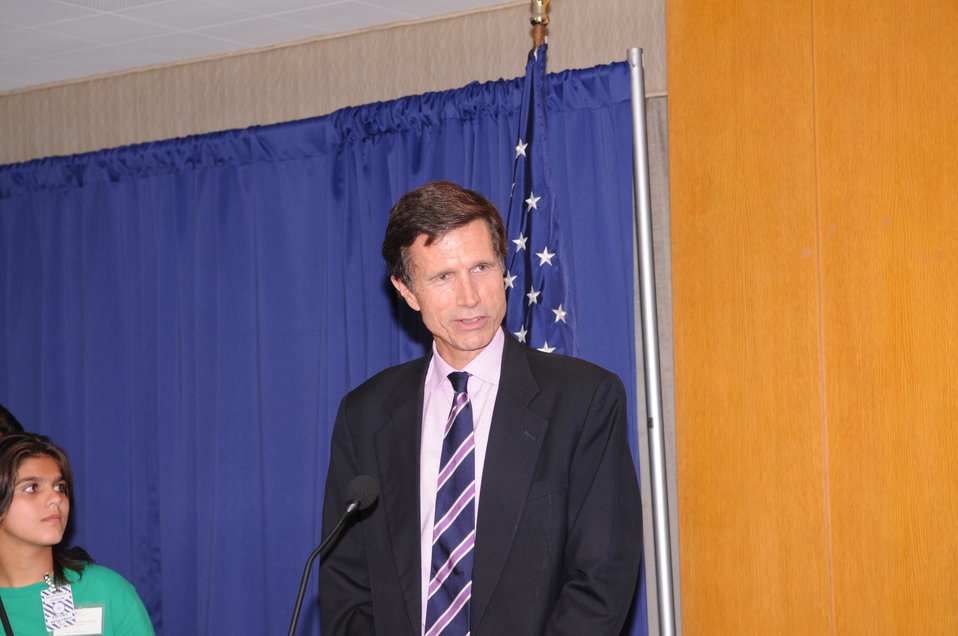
Assistant Secretary Blake Delivers the Opening Remarks

U.S. Assistant Secretary of State for South and Central Asian Affairs delivers the opening remarks at the Seeds of Peace reception at the U.S. Department of State in Washington, D.C., on July 14, 2010.